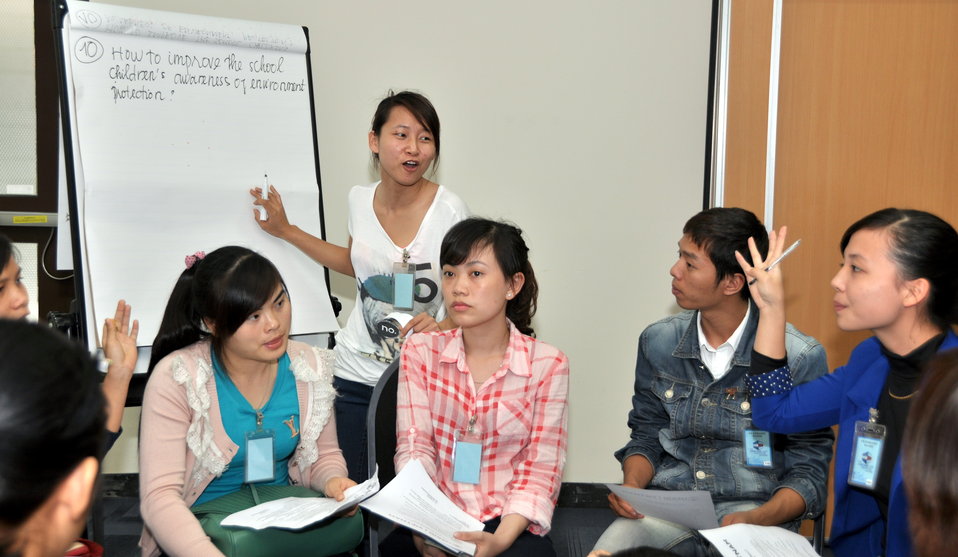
Students join the ‘USAID and Higher Education in Vietnam’ talk

Photo: @USAIDVietnam, November 19, 2012